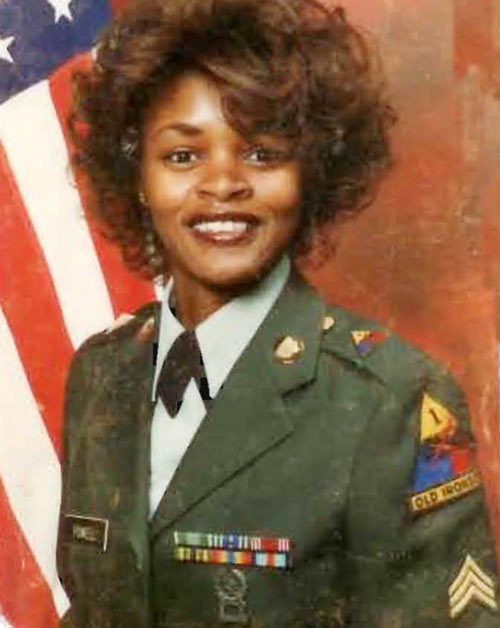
Mary Powell-Southeast Region

Mary Powell served in the U.S. Army from 1982 to 1990 leaving with an Honorable Discharge. She met and married her husband, Retired U.S. Army 1st Sgt. L. Powell. They have been married for 27 1/2 years and have three children. Two have served in U.S. Air Force. One is still on active duty at Eglin Air Force Base, Florida. She has worked for Wildlife and Sport Fisheries (WSFR - formally Federal Assistance) as a Grants Program Specialist in the Regional Office in Atlanta, Georgia for the past 11 years.